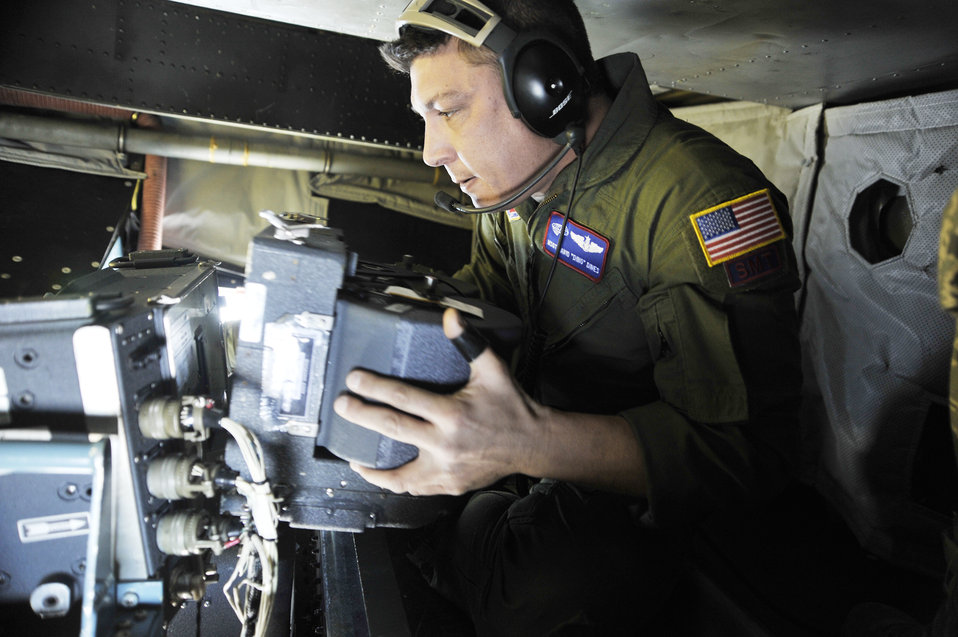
Air Force asset used to assess damaged needs

Master Sgt. David Dines changes out the film aboard an OC-135B Open Skies observation aircraft during pre-flight checks Jan 16, 2010, at Joint Base Andrews, Md. The OC-135B is used to conduct observation flights in support of the Open Skies Treaty. The OC-135B is with the 45th Reconnaissance Squadron at Offutt Air Force Base, Neb.